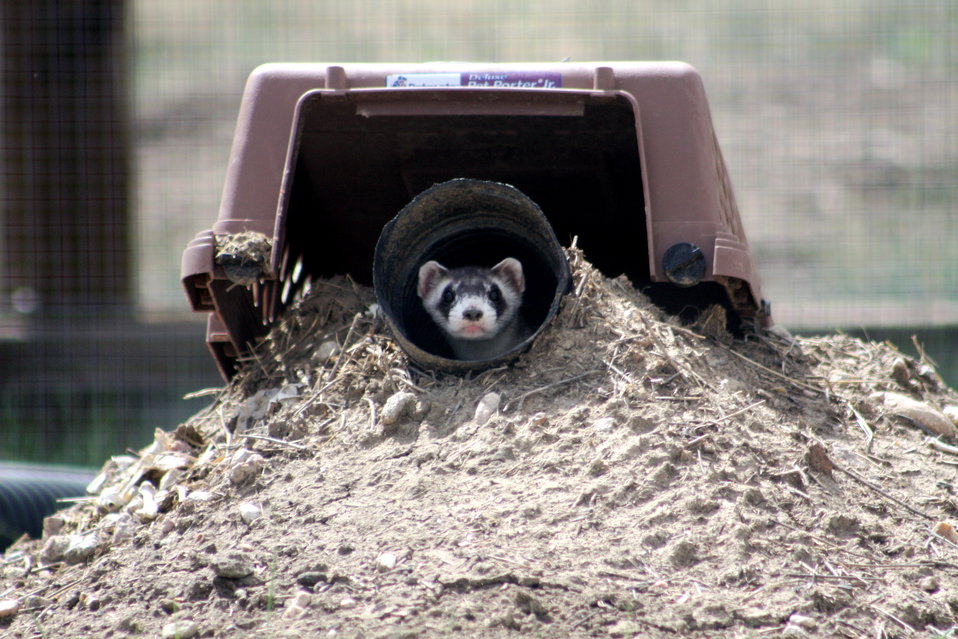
Interns visit the NBFFCC

In the summer of 2012, USFWS Region 6 interns visited the National Black-footed Ferret Conservation Center (NBFFCC) in Colorado to learn how the program reintroduces the endangered Black-footed ferret back into its native habitat.